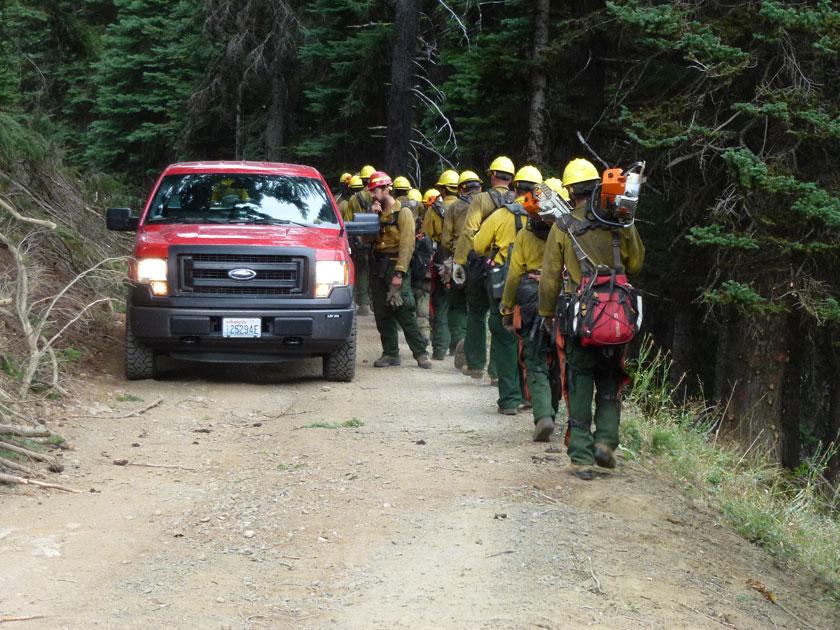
Firefighters hike up to fire line at the Manastash Ridge Fire. The Manastash Ridge Fire in the Wenatchee National Forest near in Cle Elum, WA began on Aug. 9, 2013 began by lightning has consumed approximately 2,352 acres and is 40% contained.